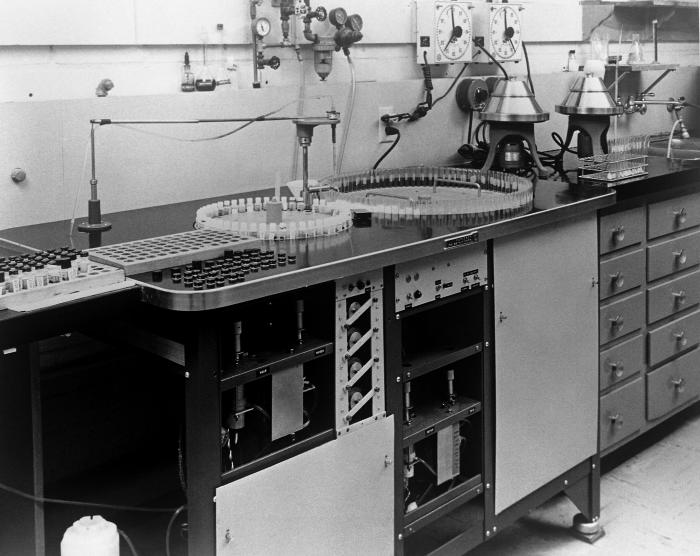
This photograph, taken at a laboratory on the Centers for Disease Control's Chamblee, Georgia campus in 1963, showed a sampling machine that was used in the analytical determination of protein-bound iodine (PBI).